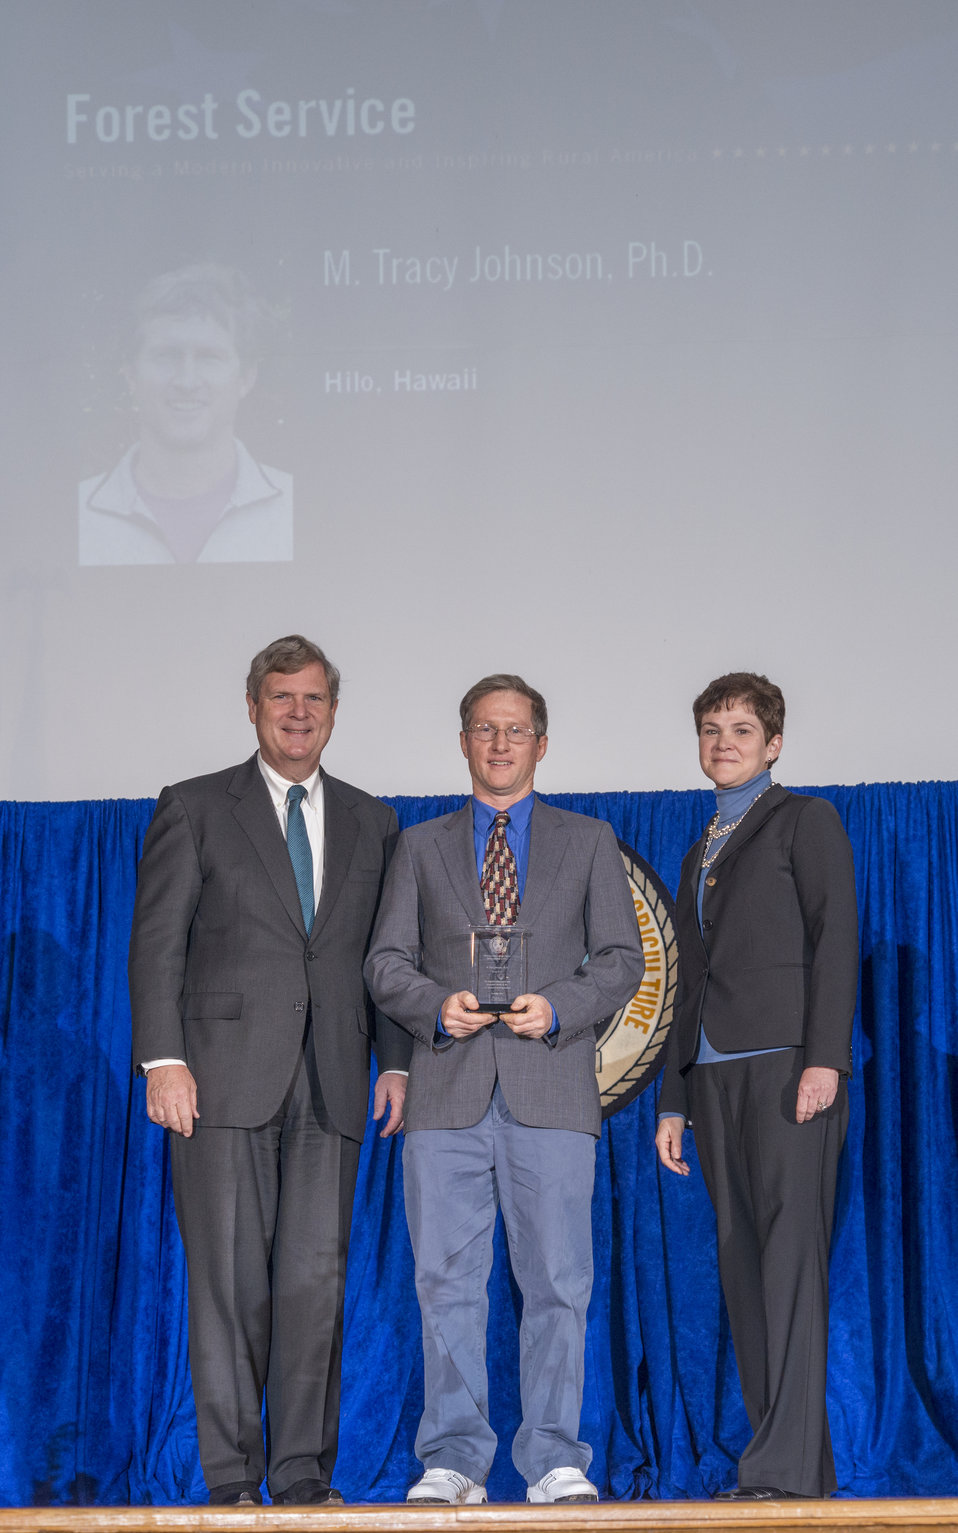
Agriculture Secretary Tom Vilsack and Agriculture Deputy Secretary Krysta Harden present the Secretary’s Honor Award to Forest Service (FS), Hilo, HI employee M. Tracy Johnson, Ph.D., for his outstanding leadership in delivering to the State of Hawaii an effective host-specific biological control agent against the invasive species, strawberry guave at the 2013 Secretary's Honor Awards in the Jefferson Auditorium at the U.S. Department of Agriculture (USDA) in Washington, D.C. on Wednesday, Dec. 11, 2013.